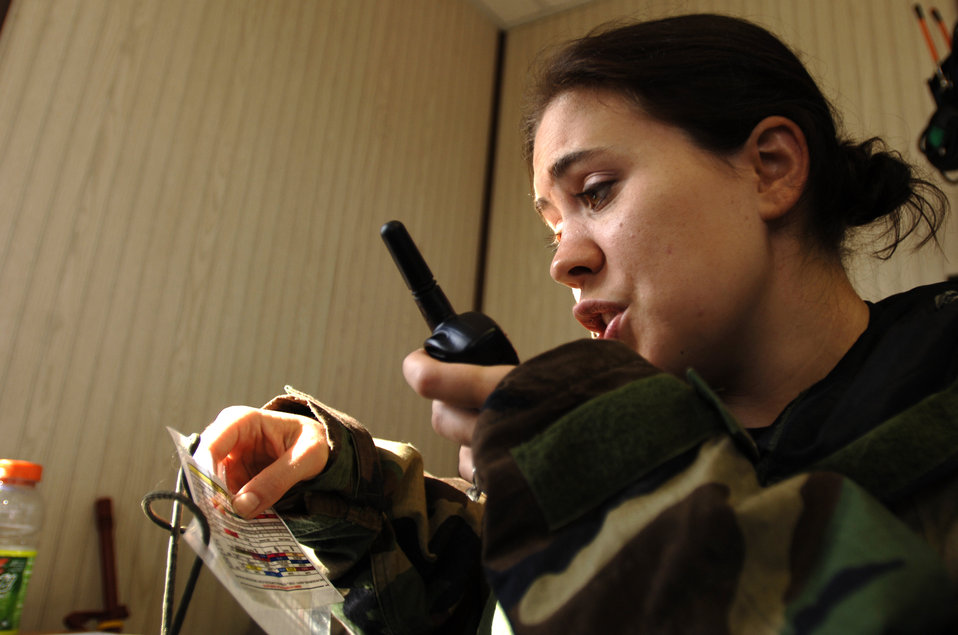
Airmen compete in training challenge

Capt. Kourtney Shaw receives in-the-field information from her team participating in the Chemical Biological Radiological Nuclear Challenge at Brooks City-Base, San Antonio, Sept. 15. Captain Shaw is assigned to Shaw Air Force Base, S.C.